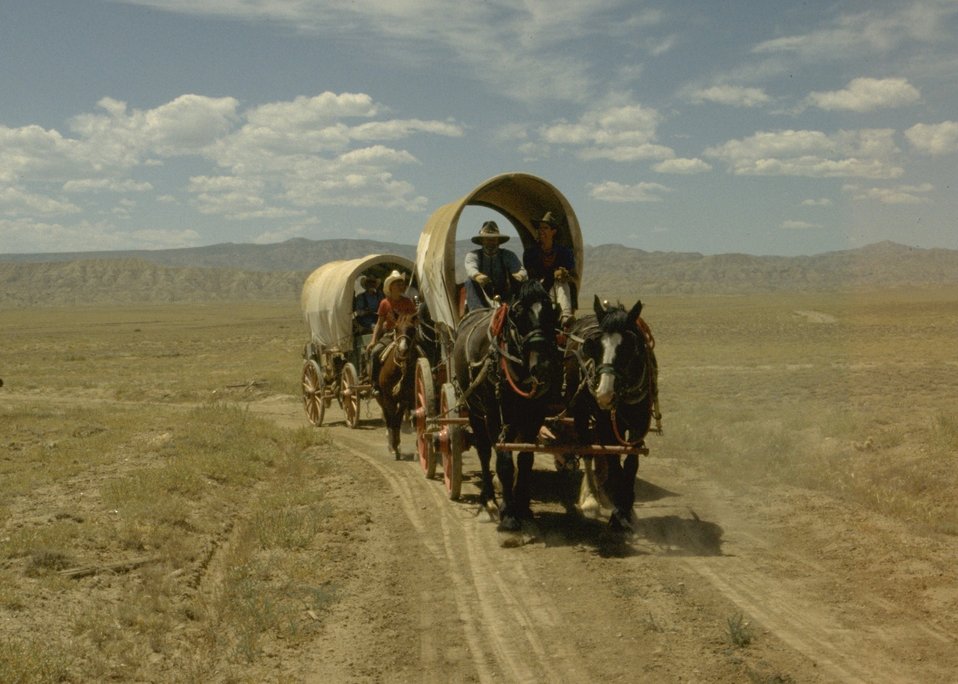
Horsedrawn wagon .